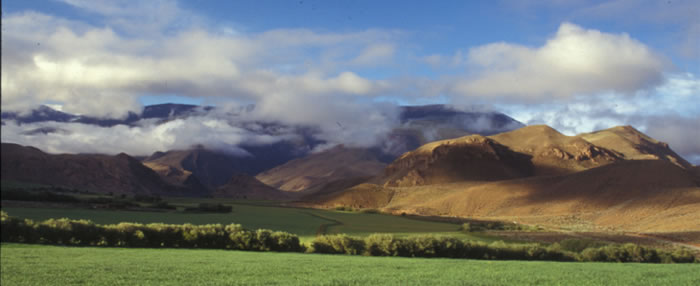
Landscape - Idaho Fish and Wildlife Office